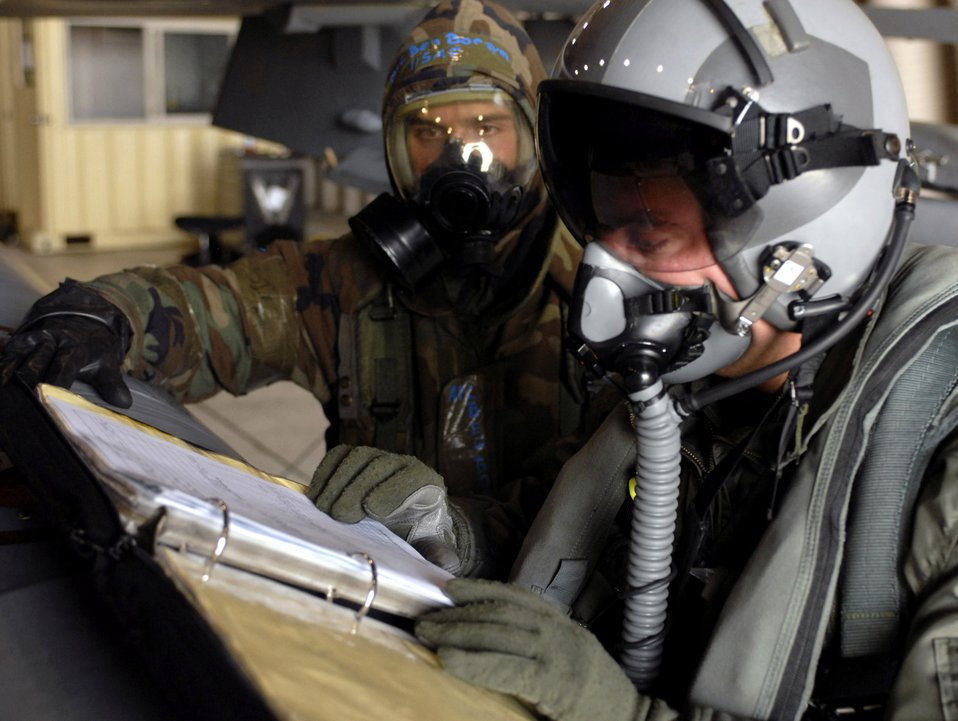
Testing readiness at Kunsan

Capt. Darin Wetzler and Airman 1st Class Ben Borzym review a checklist prior to takeoff during the Peninsula Operational Readiness Exercise Nov. 6 at Kunsan Air Base, South Korea. The exercise tests the wing's ability to train and work in real-world situations. Captain Wetzler is a pilot with the 80th Fighter Squadron, and Airman Borzym is a crew chief with the 8th Aircraft Maintenance Squadron.